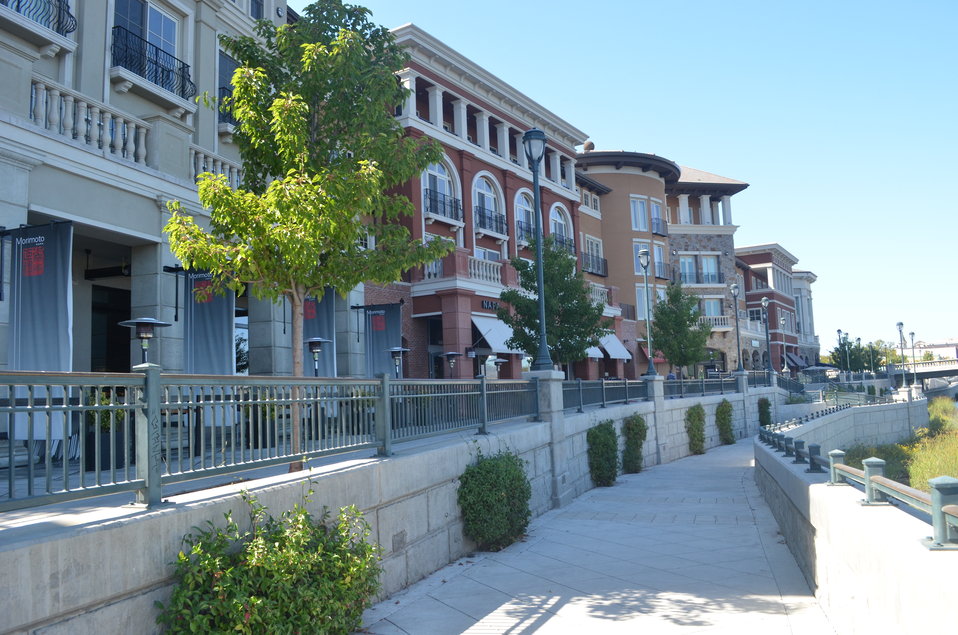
Napa flood risk reduction efforts

A view of the terraced floodwall that also serves as walking path along the river. (US Army Corps of Engineers/DeDe Cordell)